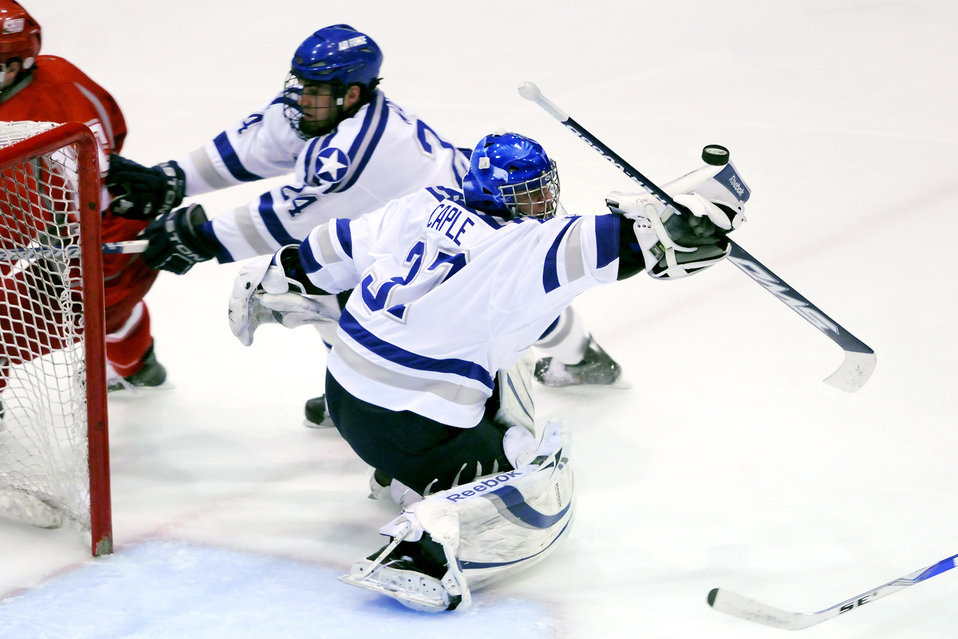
Falcons hockey team beats Pioneers

Academy sophomore Stephan Caple deflects one of this three saves after replacing senior Andrew Volkening as goalie as the Falcons beat the Sacred Heart Pioneers 8-1 Feb. 27, 2010, at the U.S. Air Force Academy's Cadet Ice Arena. The victory clinched third place in the Atlantic Hockey Association, improving to 14-14-6 overall and 14-8-6 in the AHA.